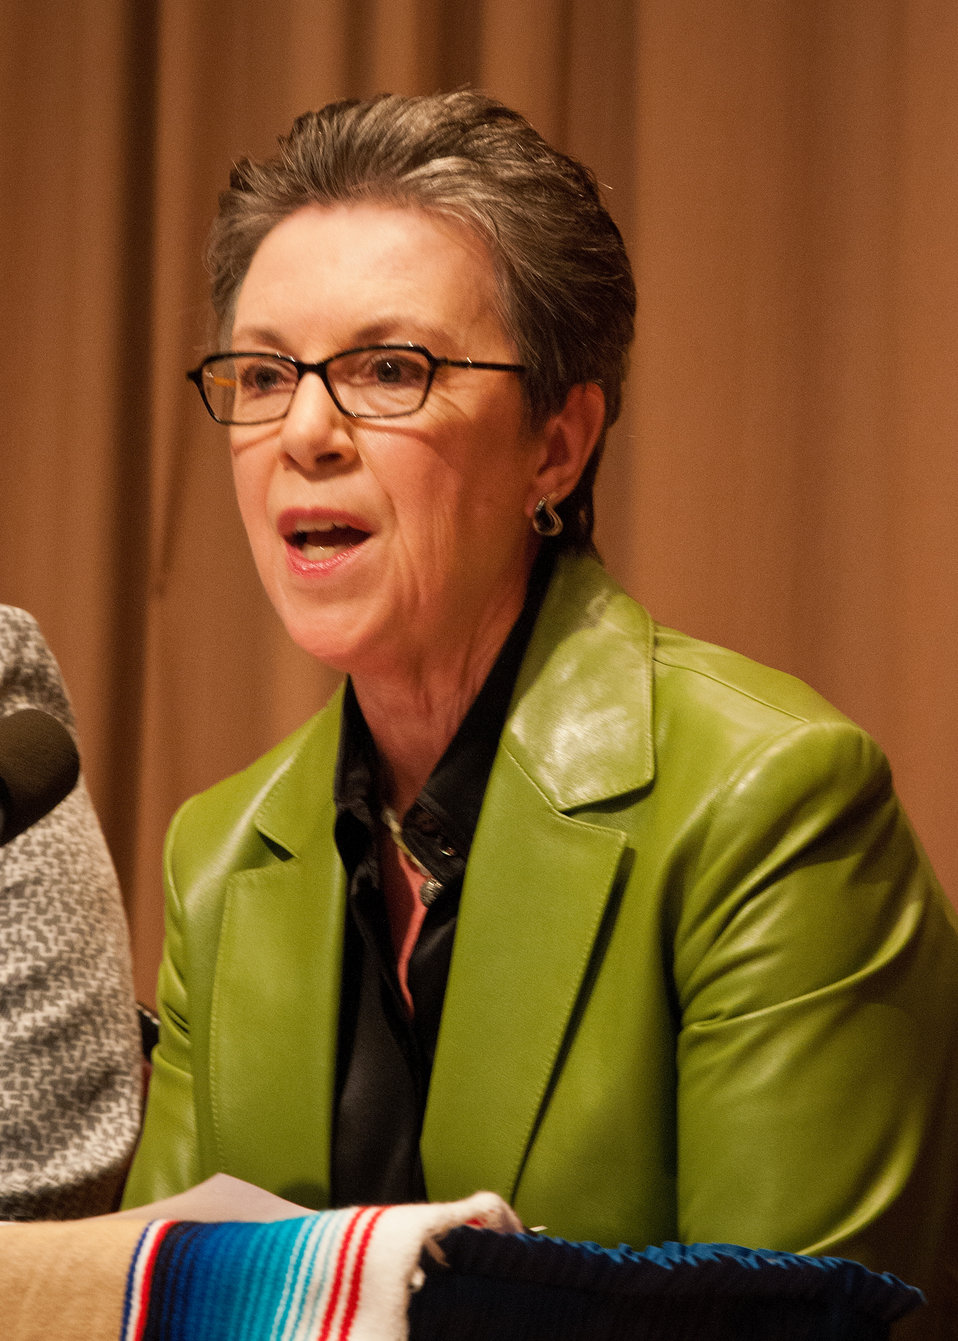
Agriculture Under Secretary for Research, Education and Economics (REE) Dr. Catherine Woteki was a keynote speaker on a panel discussion on Education, Economics and Nutrition at the U. S. Department of Agriculture (USDA) 2012 Hispanic Heritage Month in Washington, D.C. on Thursday Sept. 20, 2012. Deputy Under Secretary Pino spoke about how nutrition relates to the Hispanic American community.